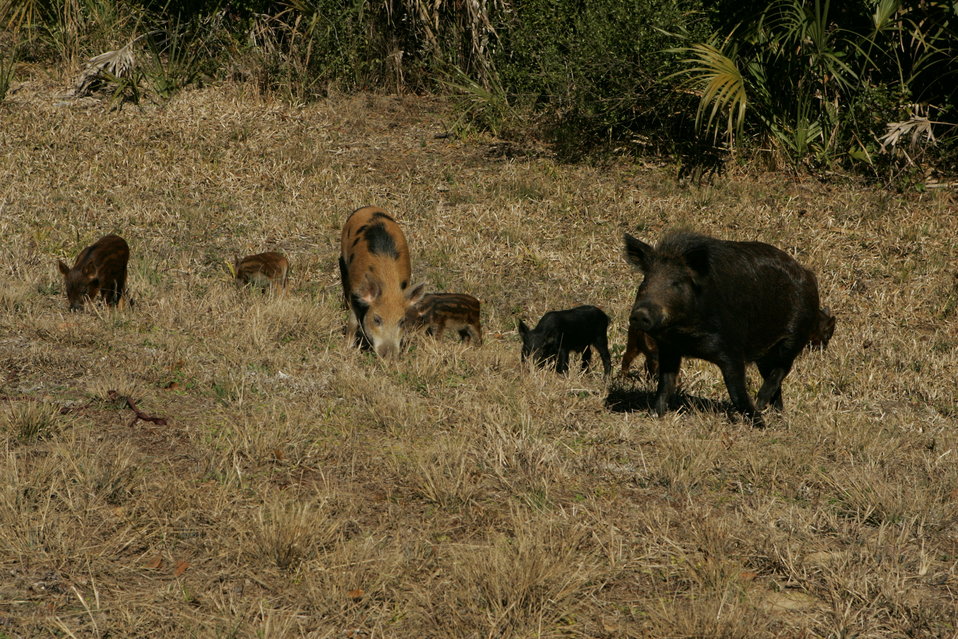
feral pigs

Feral hogs damage native plants at Lower Suwannee National Wildlife Refuge in Florida.